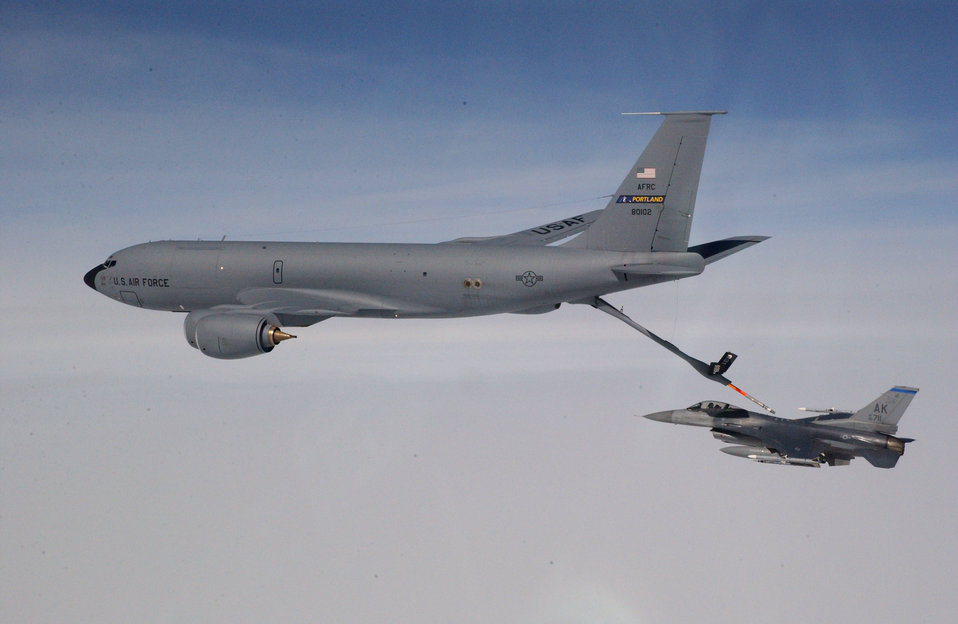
Tanker refuelling an F-16

A KC-135 Stratotanker refuels an F-16 Fighting Falcon during a past Northern Edge exercise. Northern Edge '08, a joint training exercise hosted by the Alaskan Command, kicks off May 5. This year's exercise will involve more than 120 Air Force, Army, Air National Guard, Navy and Marine aircraft.